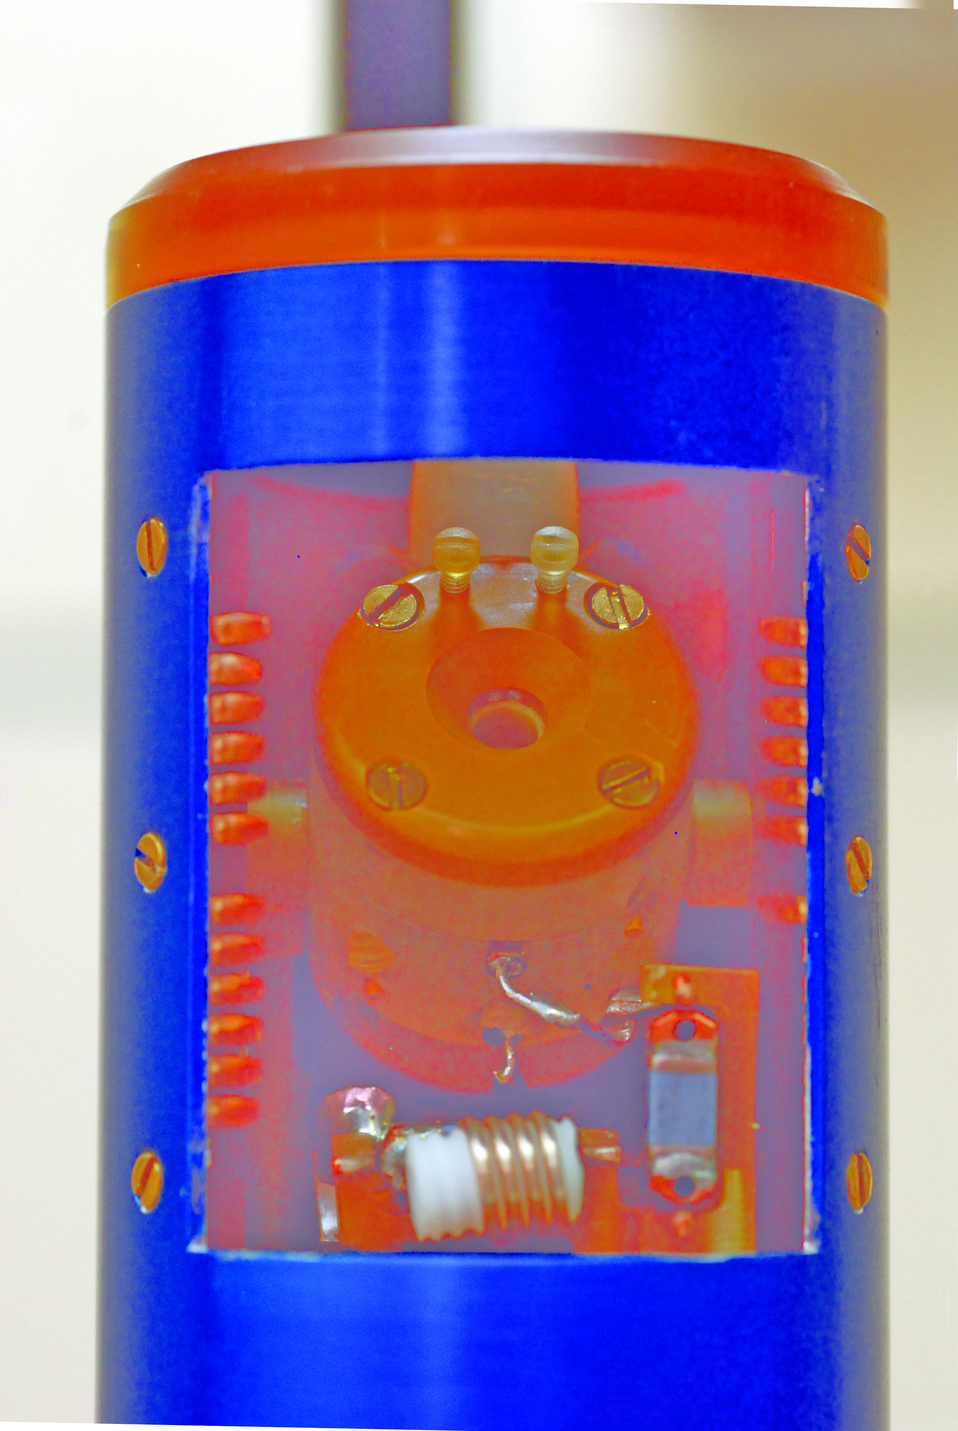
THE BUSINESS END OF AN NUCLEAR MAGNETIC RESONANCE (NMR) PROBE AT AMES LAB.

Ames Laboratory is a research lab for the Department of Energy that seeks solution to energy related problems through the exploration of chemical, engineering, materials, mathematical and physical.